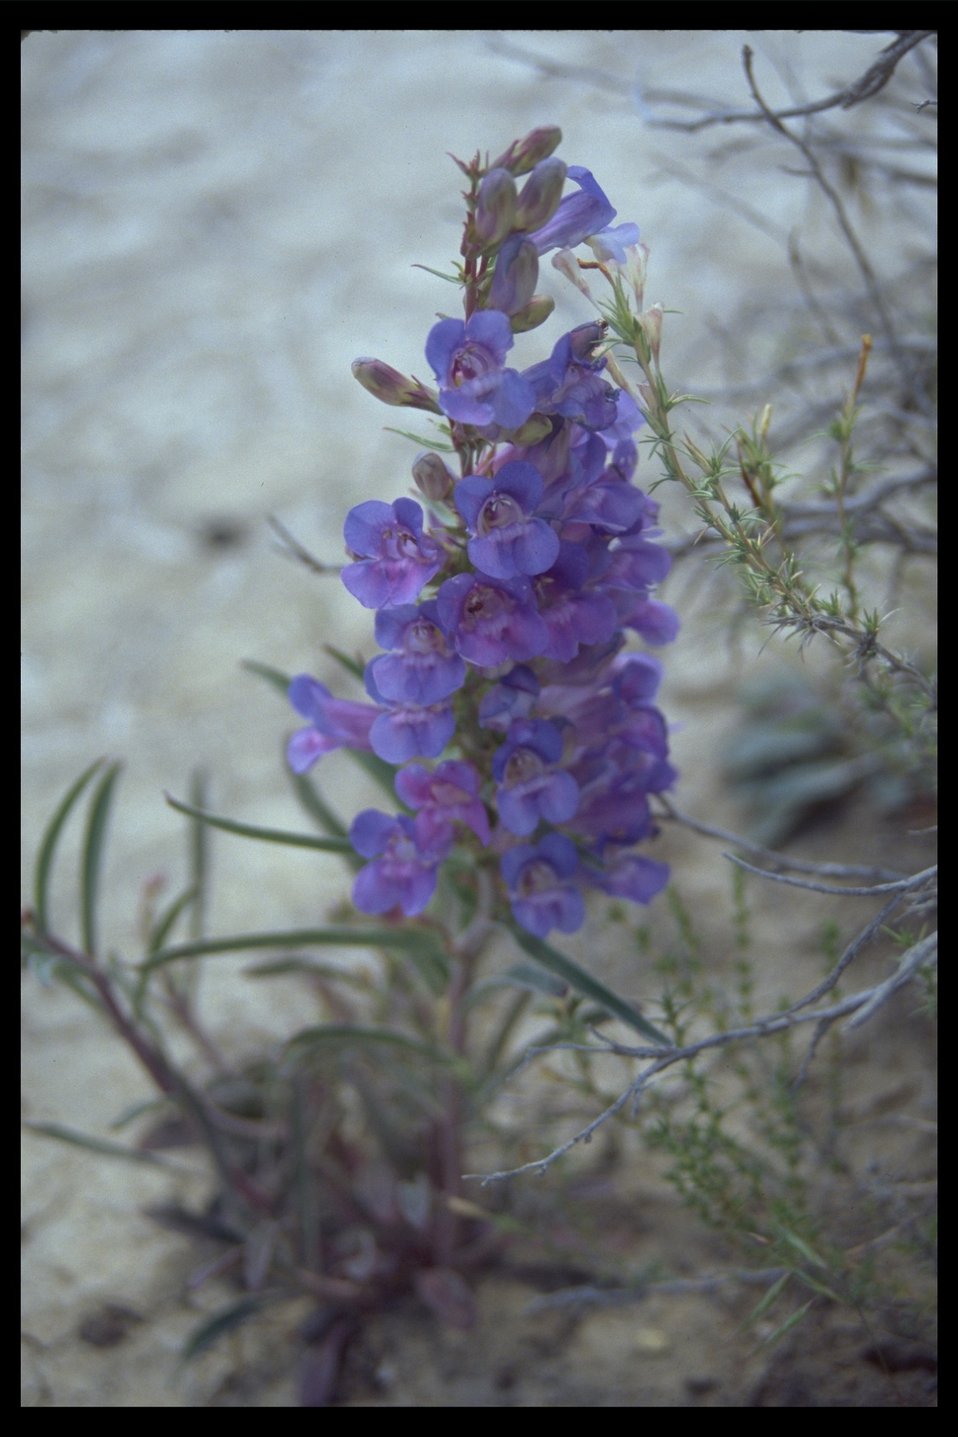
Alvord Desert WSA, Coyote Lake Sand Dunes and a Showy Penstamen (sp?). (2-74)